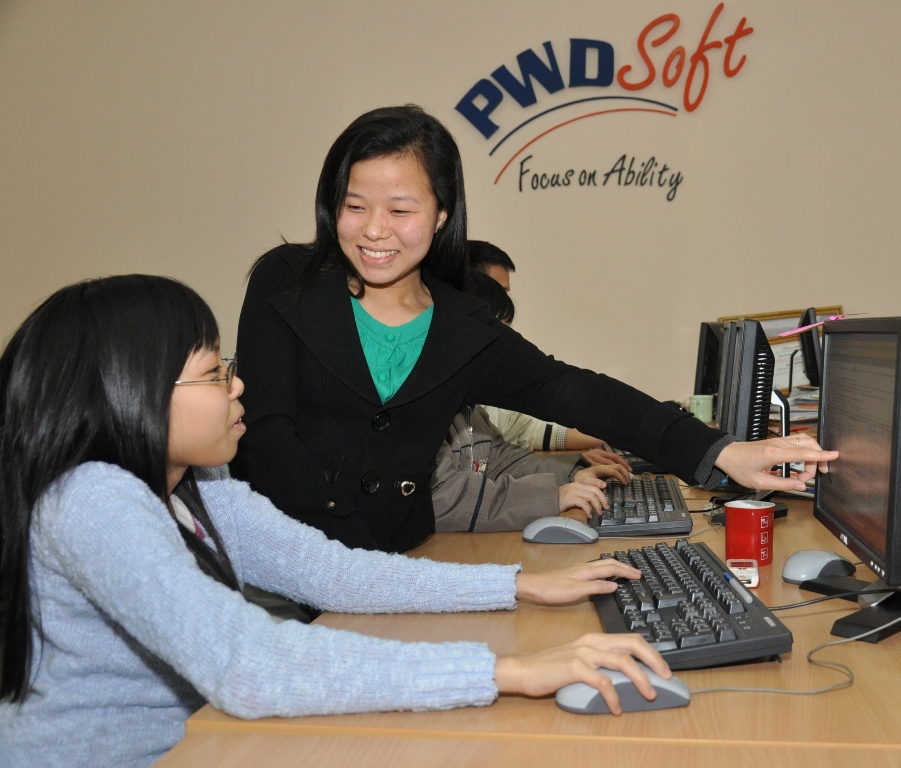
USAID assists persons with disabilities in Vietnam

Le Thi Le, right, gives a few tips to Pham Thu Huong at the PWD Soft company, a subsidiary of Digital Telecommunication Technology, where she works as human resources manager.